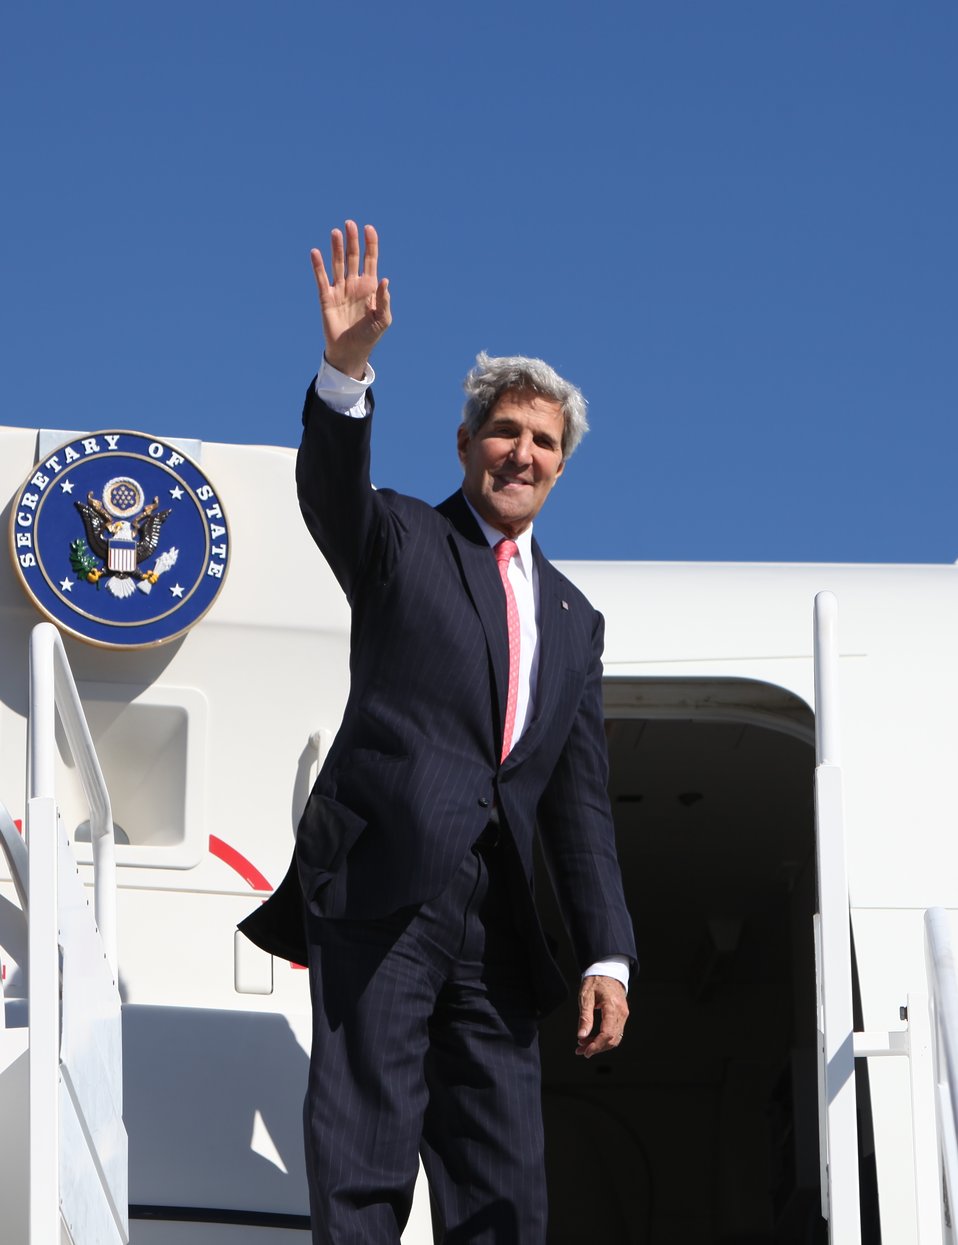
Secretary Kerry Departs Vilnius, Lithuania

U.S. Secretary of State John Kerry waves before boarding a plane at the airport in Vilnius, Lithuania on his way to Paris, France on September 7, 2013.